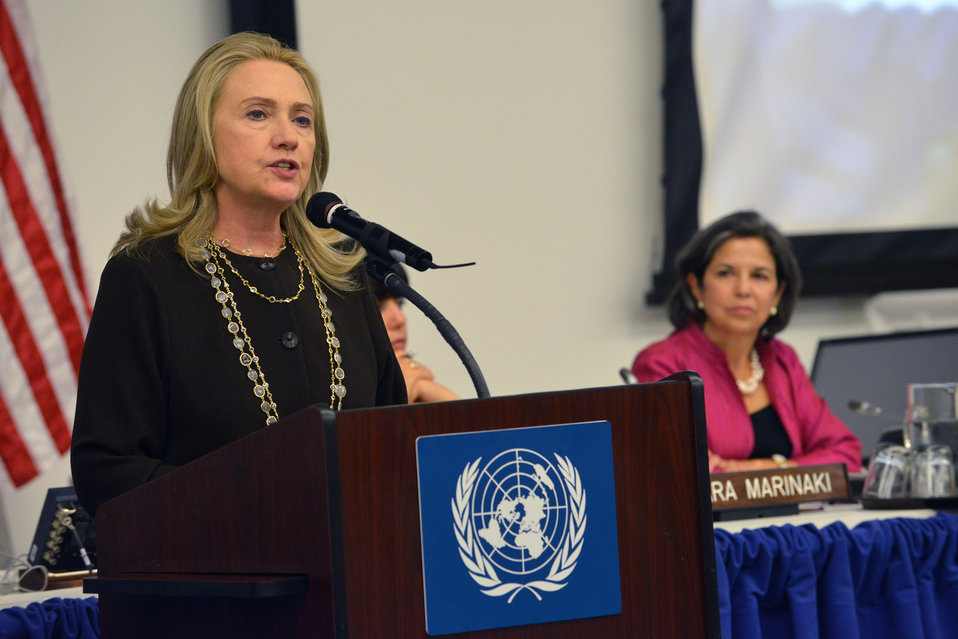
Secretary Clinton Delivers Remarks at a Roundtable on Global Water Security

U.S. Secretary of State Hillary Rodham Clinton delivers remarks at a roundtable on global water security at the United Nations in New York, New York on September 25, 2012.